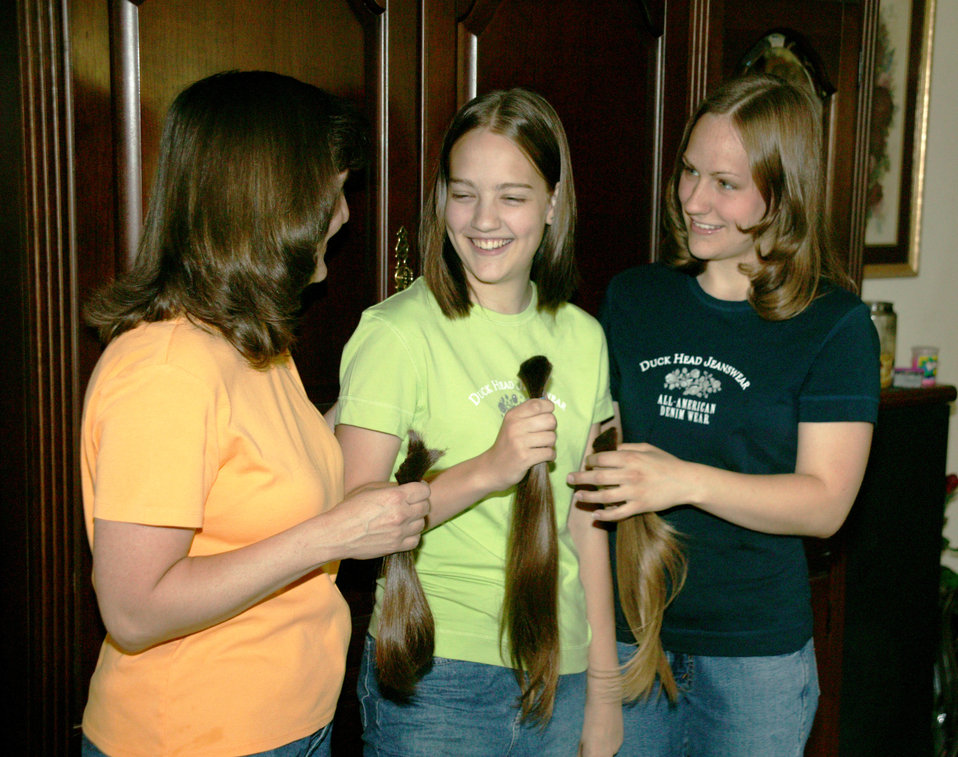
Mother, daughters share 'Locks of Love'

Monique McCause and her two daughters, Bethany and Tenette, compare ponytails they are donating to Locks of Love at Shaw Air Force Base, S.C., on Friday, June 2, 2006. Locks of Love is a nonprofit organization that takes donated hair and turns it into hairpieces for financially disadvantaged children who suffer hair loss from long-term medical care. Monique's husband is Tech. Sgt. Bruce McCause, 20th Component Maintenance Squadron.